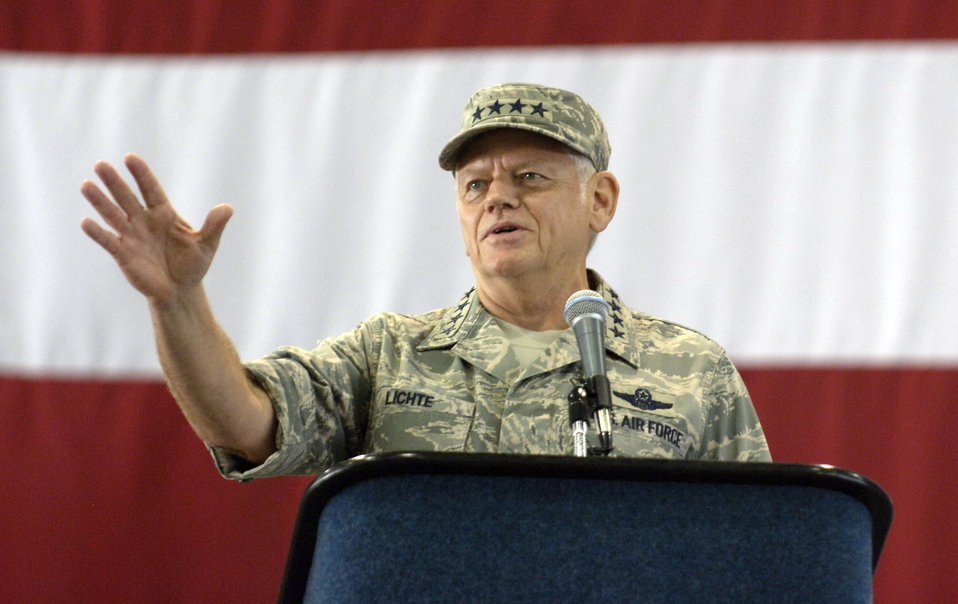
New mobility commander to continue raising the bar

Gen. Arthur J. Lichte addresses attendees at his assumption of command ceremony as the Air Mobility Command commander Sept. 7 at Scott Air Force Base, Ill.